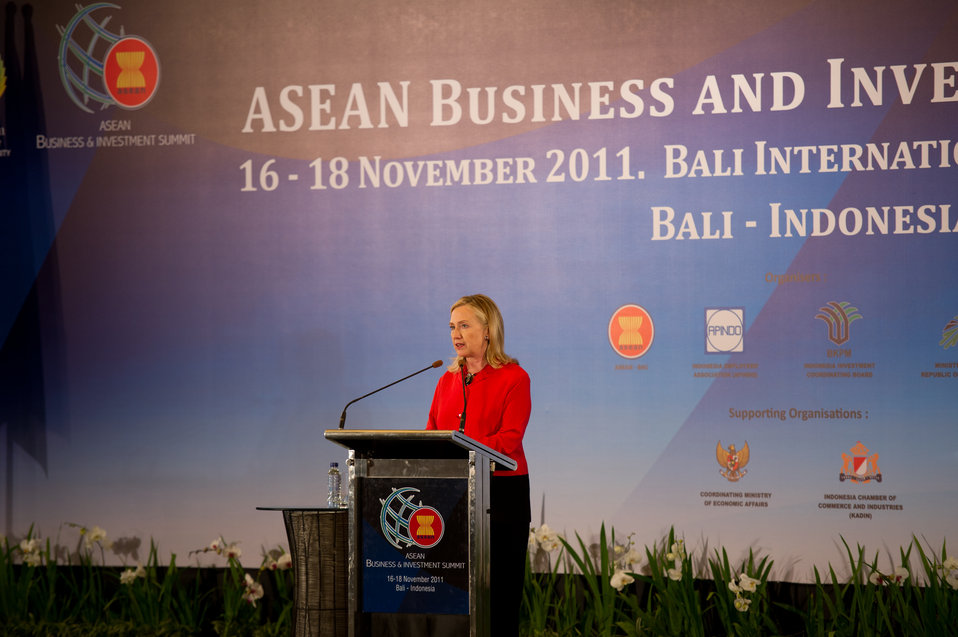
Secretary Clinton Addresses the ASEAN Business Investment Summit

U.S. Secretary of State Hillary Clinton addresses the ASEAN Business Investment Summit in Bali, Indonesia, on November 18, 2011.